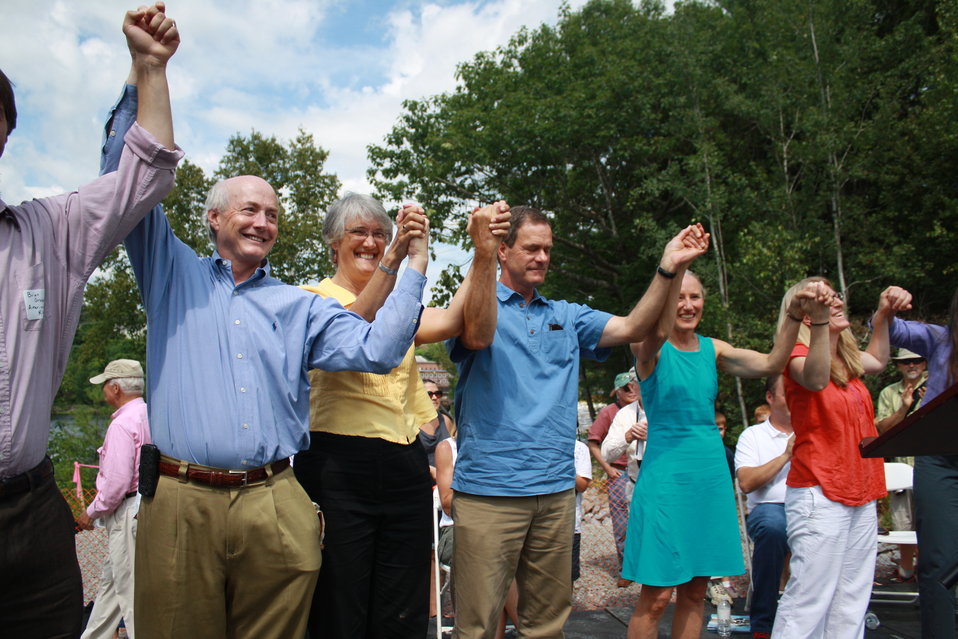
Veazie Dam Removal

Andy Goode, Vice President of U.S. Programs for the Atlantic Salmon Federation
Lisa Pohlman, Executive Director for Natural Resources Council of Maine
Tom Rumpf, Acting Director of The Nature Conservancy
Sally Stockwell, Director of Conservation for Maine Audubon
Elizabeth Maclin, Vice President for Eastern Conservation, Trout Unlimited